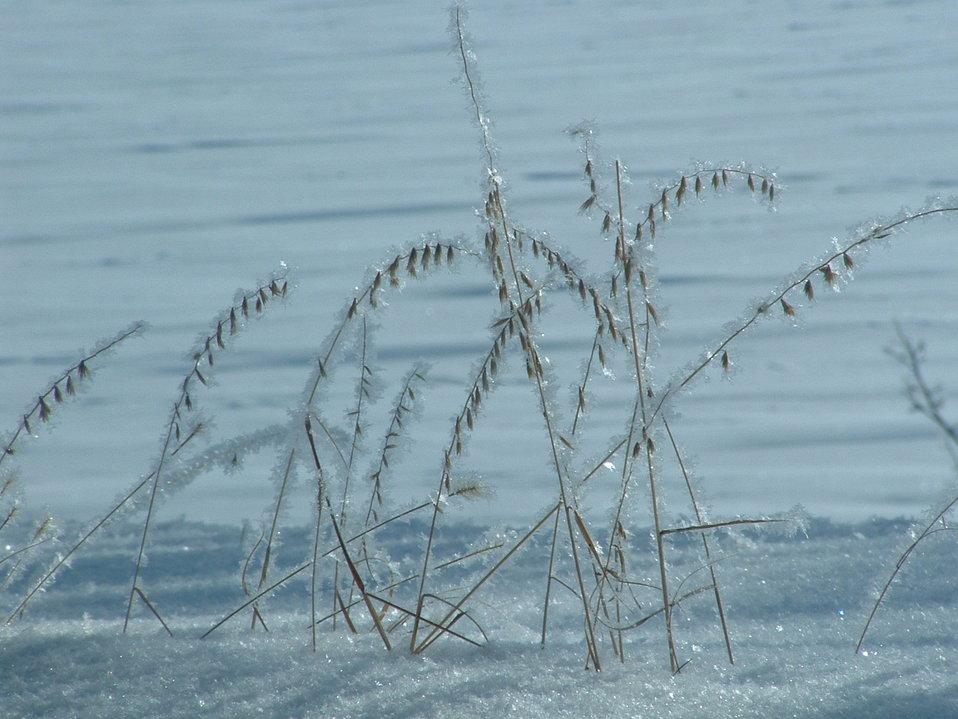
Sideoats and Snow

A prairie grass, sideoats grama, covered in frost and snow at Waubay National Wildlife Refuge.

Credit: Laura Hubers / USFWS, December 6, 2010